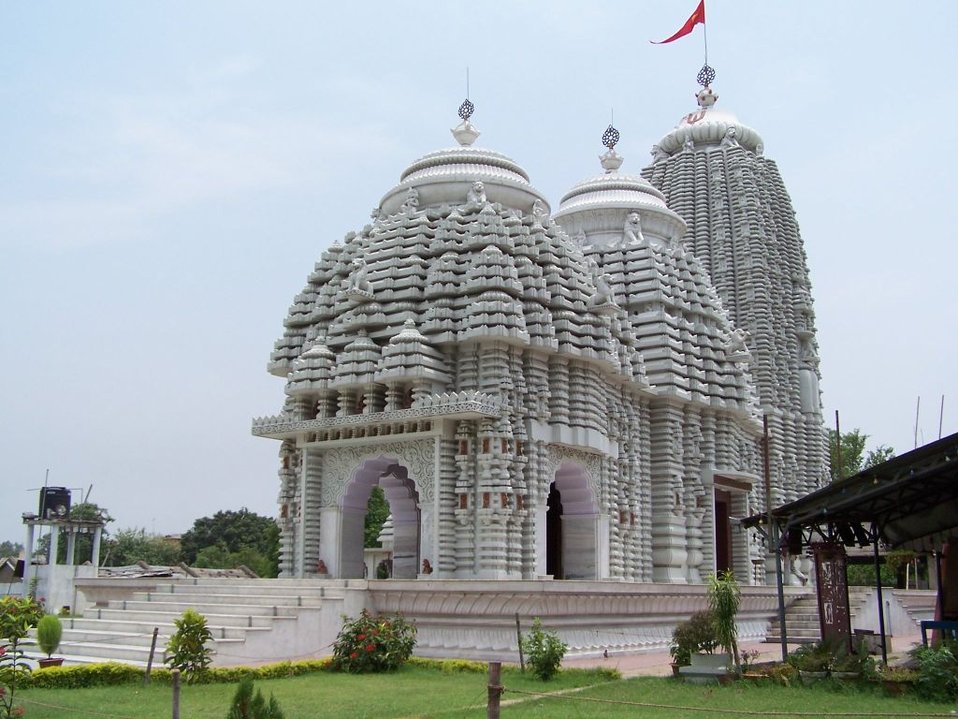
It's the Jagannath Temple at Bokaro Steel City. Built recently with the help of the Bokaro Steel Plant Management, it has been an active religious place for its citizens. Its known for its evening Aarti and once a year Rath yatra. Dhiraj